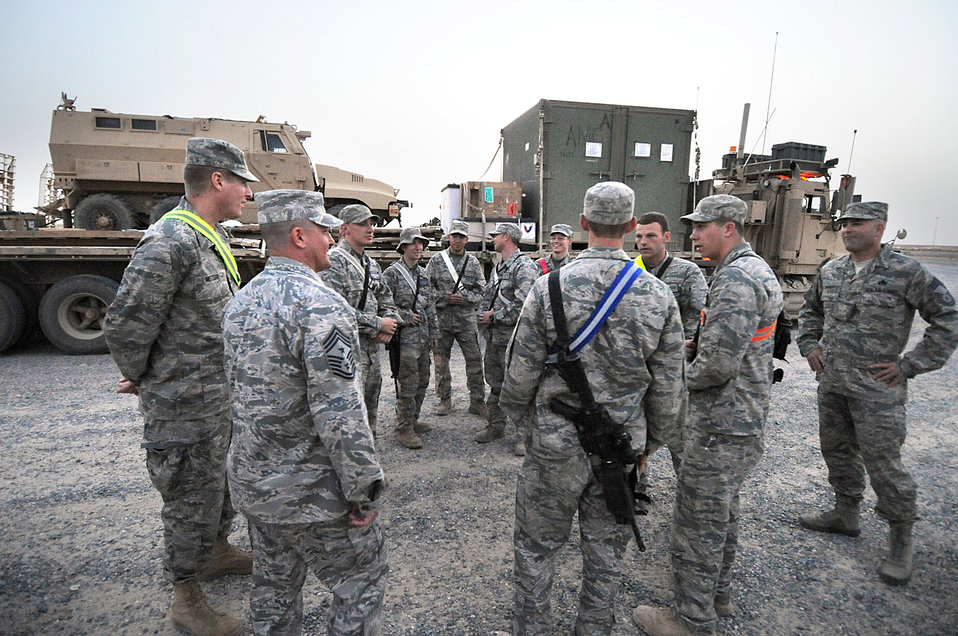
Road warriors: 387th combat truckers get leadership greeting

Airmen are greeted by squadron, group and wing leaders upon their return from a convoy mission May 4, 2011, in Southwest Asia.